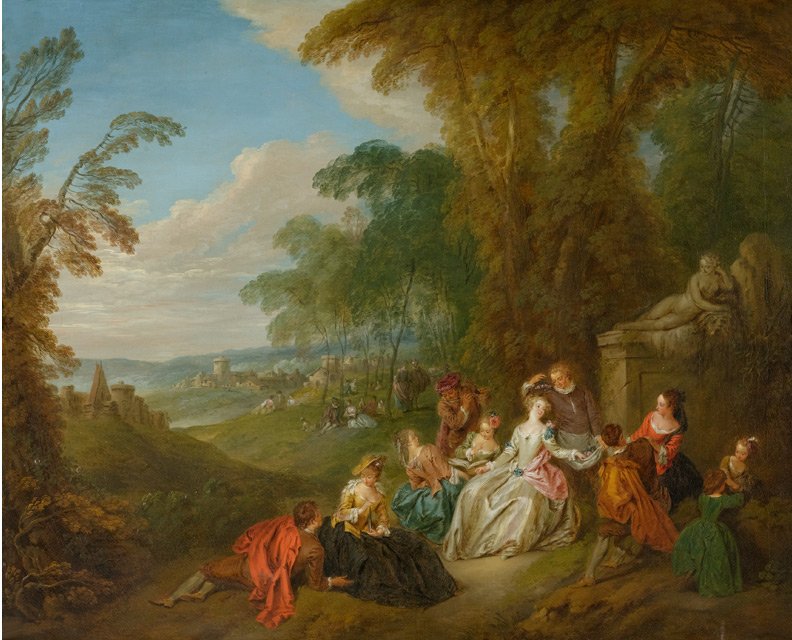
'Fête champêtre' by Jean-Baptiste Pater. Oil on canvas. 89x110 cm.